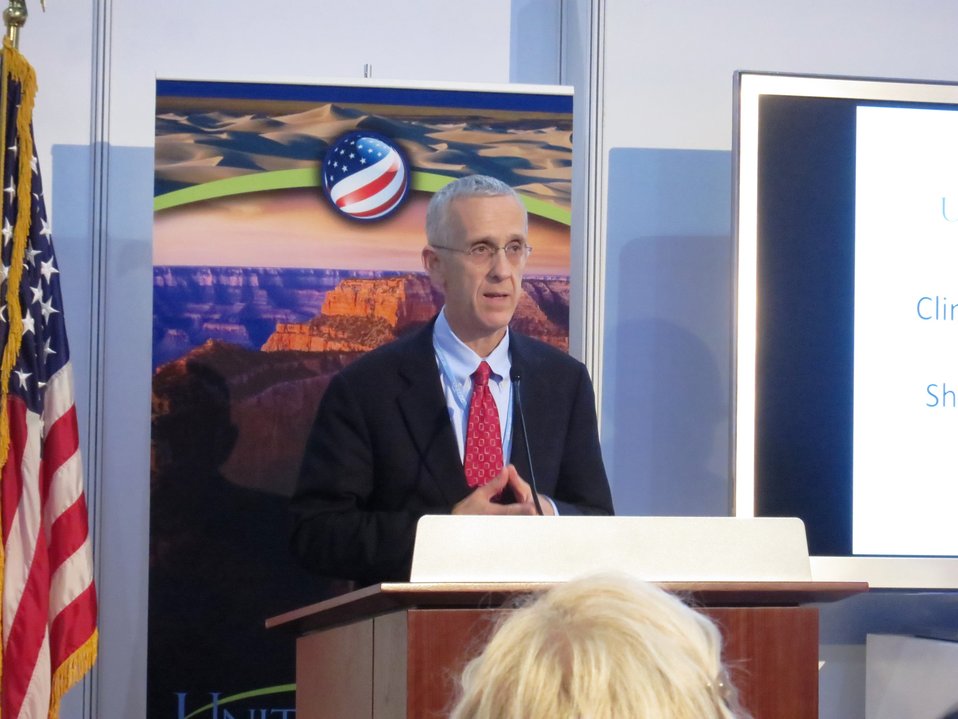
Special Envoy Stern Delivers Remarks on Climate and Clean Air Coalition

Special Envoy for Climate Change Todd Stern delivers remarks on Climate and Clean Air Coalition – U.S. Action on Short-Lived Pollutants, U.S. Center at the 18th Session of the Conference of the Parties to the UN Framework Convention on Climate Change (COP-18) in Doha, Qatar, December 5, 2012.